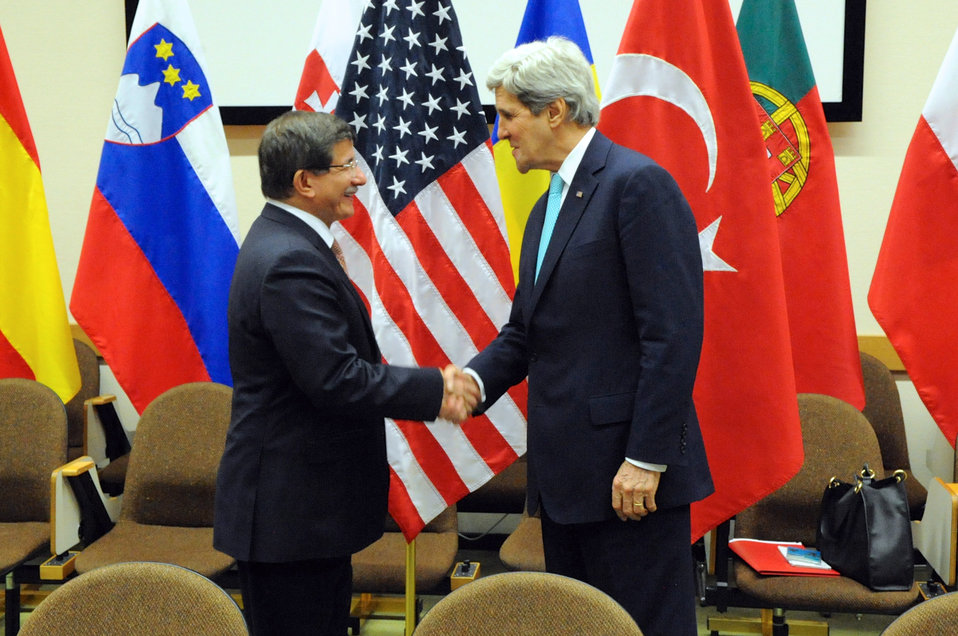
Secretary Kerry Greets Turkish Foreign Minister Davutoglu For Meeting in Brussels

U.S. Secretary of State John Kerry shakes hands with Turkish Foreign Minister Ahmet Davutoglu before a bilateral meeting on the margins of a NATO Ministerial Meeting in Brussels, Belgium, on April 1, 2014.